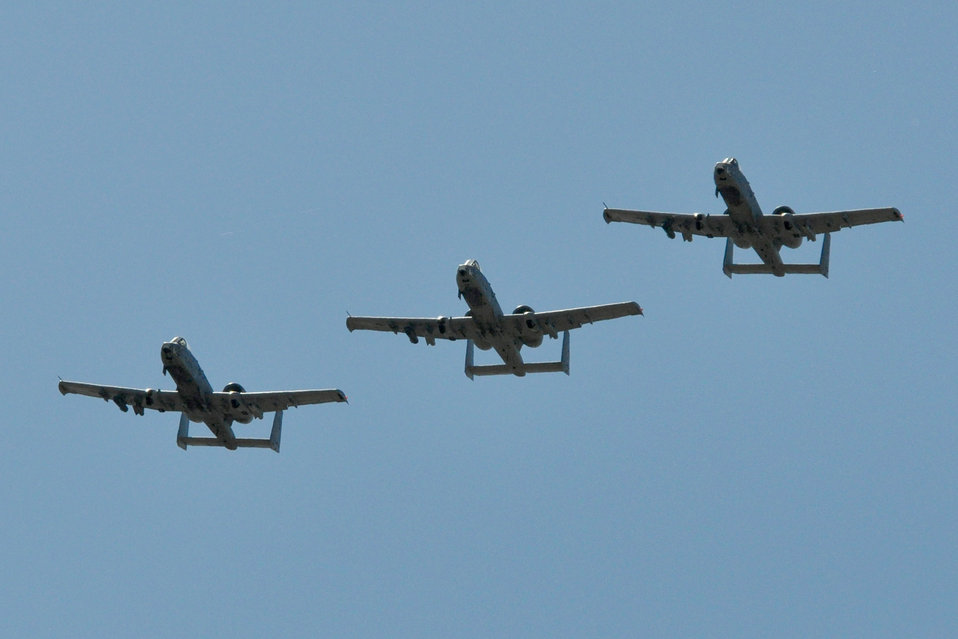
Hawgsmoke 2010

A three-ship formation of A-10 Thunderbolt IIs jets depart Oct. 14, 2010 from Saylor Creek Range in Idaho after competing in Hawgsmoke 2010. The A-10s are assigned to the Air Force Reserve Command's 47th Fighter Squadron from Barksdale Air Force Base, La.